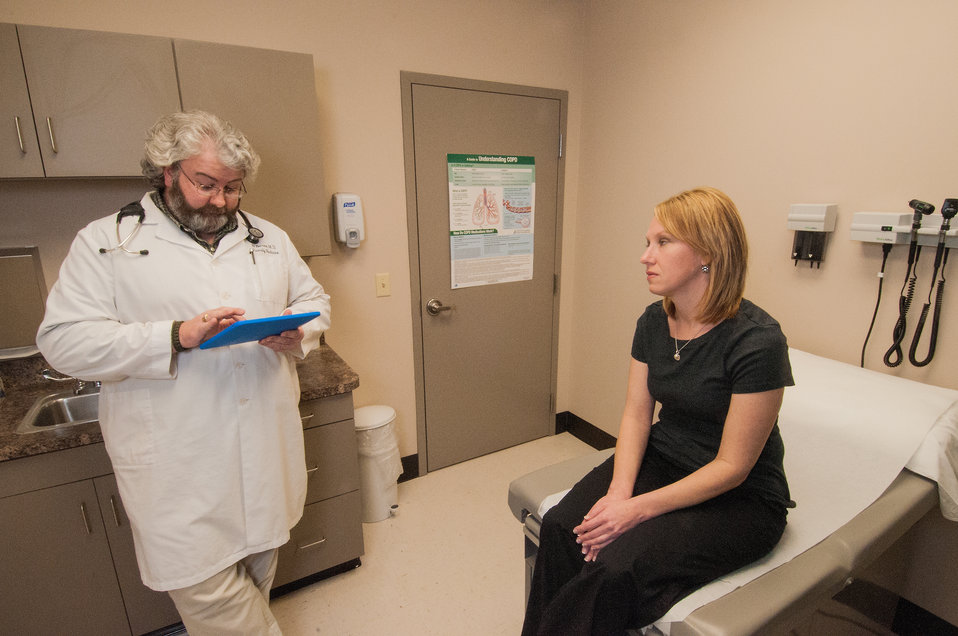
R.J. Taylor Memorial Hospital, Inc. Family Medicine Physician Dr. Albert Warren, MD consults with a patient and records the patient’s symptoms on an electronic tablet in Hawkinsville, GA on Mar. 6, 2013. The hospital is a licensed private, not-for-profit acute care facility providing emergency, specialty and primary health care in a rural area of Georgia that has a high percentage of people living below the state average poverty level and considered most economically distressed. The hospital has purchased an Electronic Medical Records System under an incentive program by the Federal government through the U.S. Department of Agriculture (USDA) Rural Development (RD) Community Facilities Loan (CF) that ensures fiscally responsive access to superior quality integrated health care.